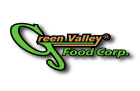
RECALLED - Alfalfa Sprouts

December 22, 2011 - Product Recall - RECALL Green Valley Food Corp. “Let’s Grow Healthy Together!” Alfalfa Sprouts 5 oz. containers because of a possible health risk.